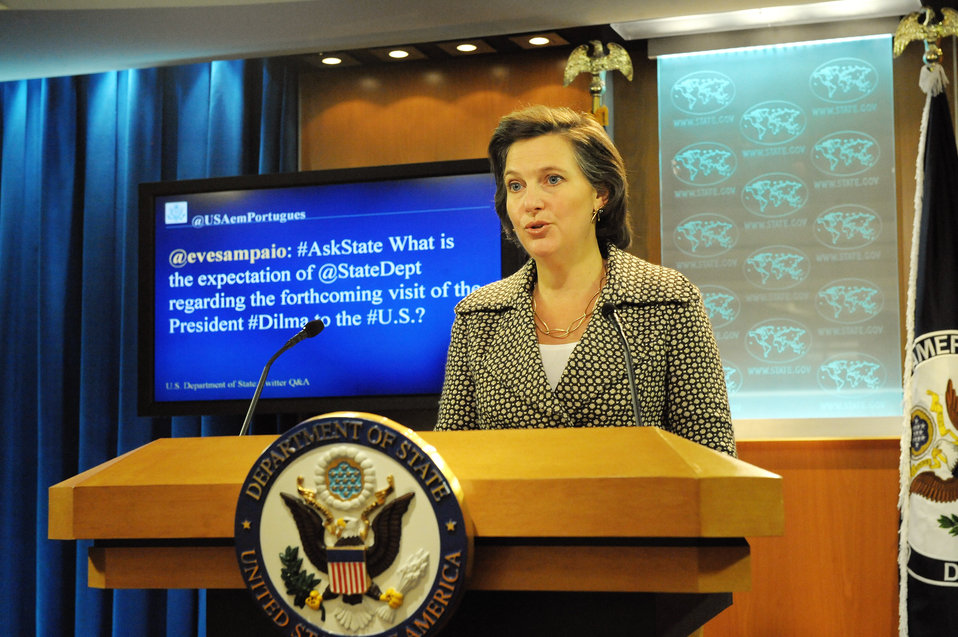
Spokesperson Nuland Responds to a Question from @USAemPortugues

Victoria Nuland, Spokesperson for the U.S. Department of State, answers a question selected from the Department’s official Portuguese Twitter feed, @USAemPortugues, on January 20, 2012.